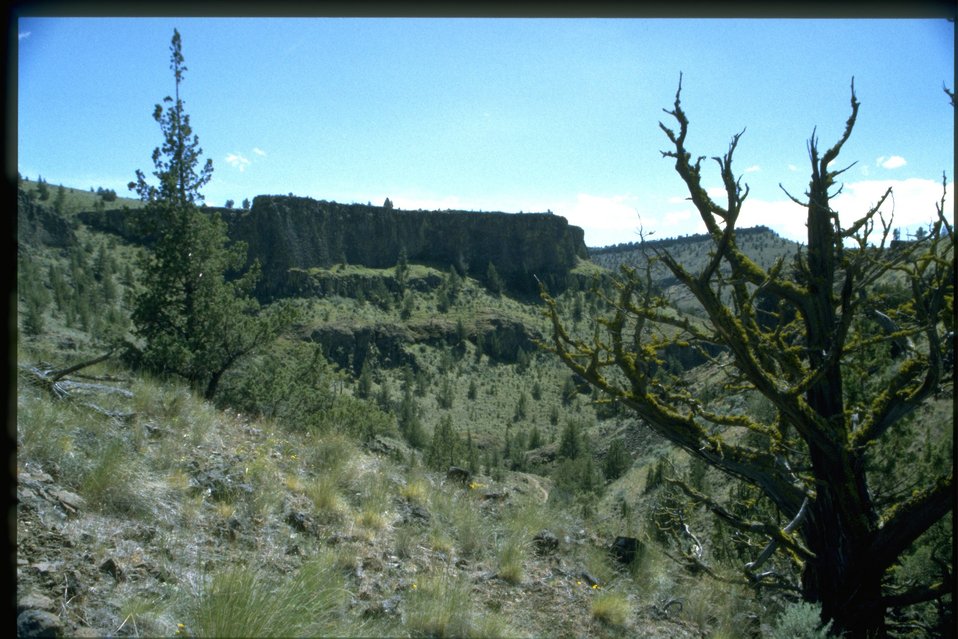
Scenery along Chimney Rock Trail.